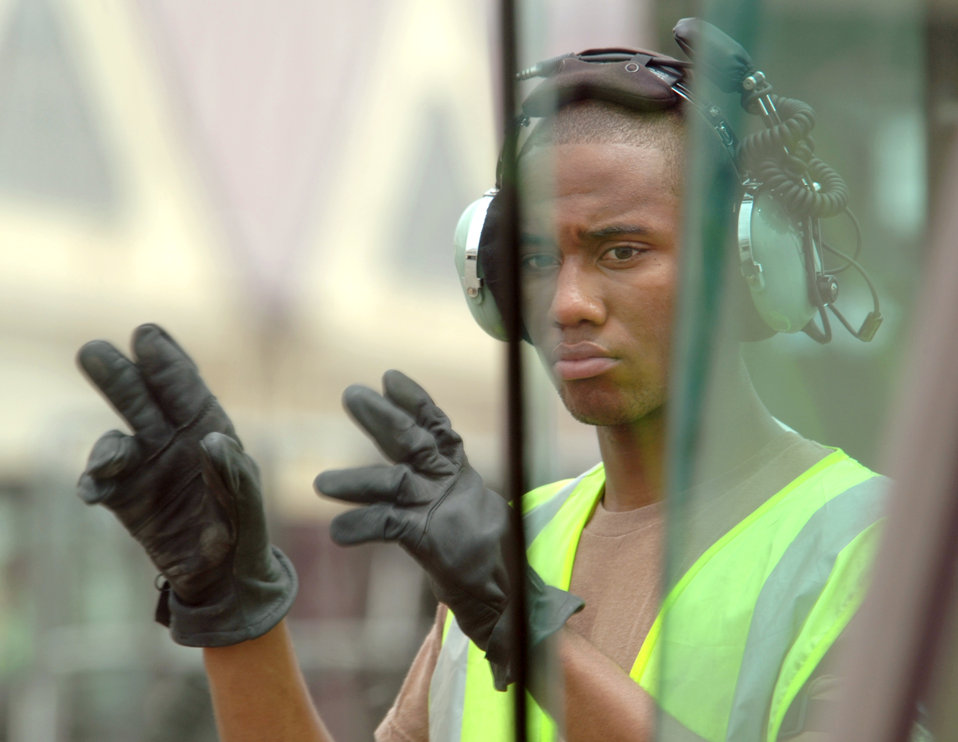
Movin' out

YOKOTA AIR BASE, Japan -- Airman Marlon Wells guides a forklift during an operational readiness exercise here. He is assigned to the 374th Airlift Wing.